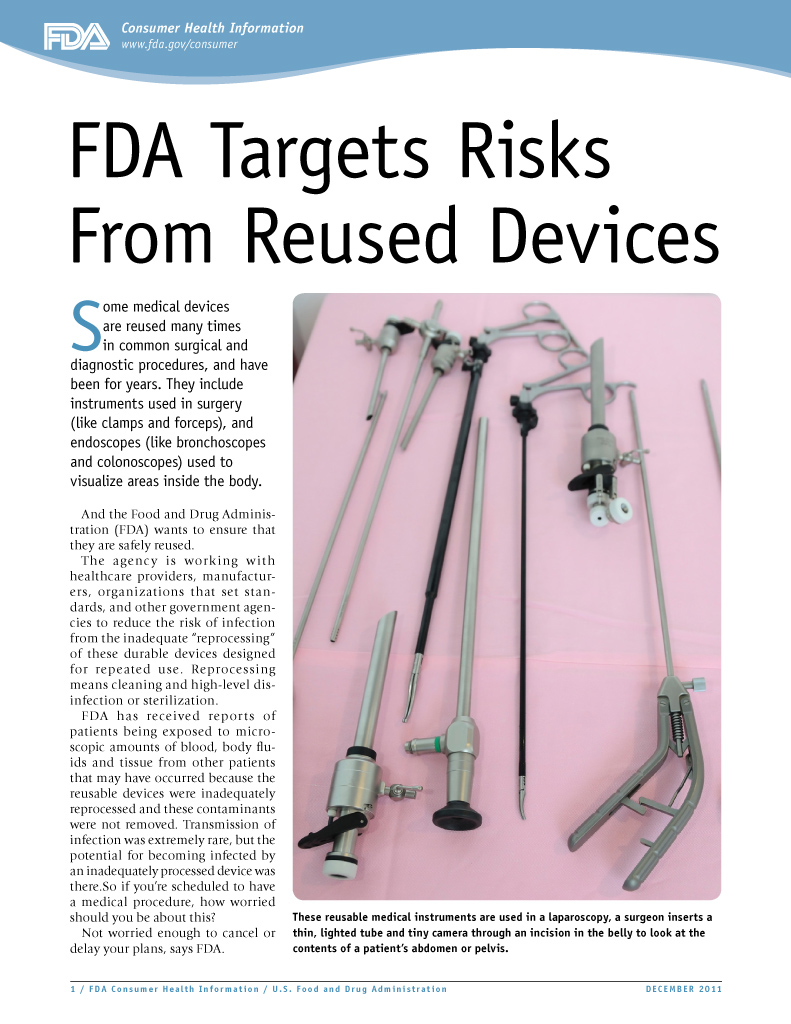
FDA Targets Risks From Reused Devices

The Food and Drug Administration is taking steps to ensure that reusable medical devices, especially endoscopes, are properly cleaned and disinfected to reduce the risk of infection. Read this FDA Consumer Update: www.fda.gov/ForConsumers/ConsumerUpdates/ucm284636.htm

Consumer Updates are a quick and easy way to pick up important health information for you and your family. For a complete list of Consumer Updates see the Consumer Updates photo set: www.flickr.com/photos/fdaphotos/sets/72157624900896241/.

For the latest Consumer Updates go to: www.fda.gov/forconsumers/consumerupdates